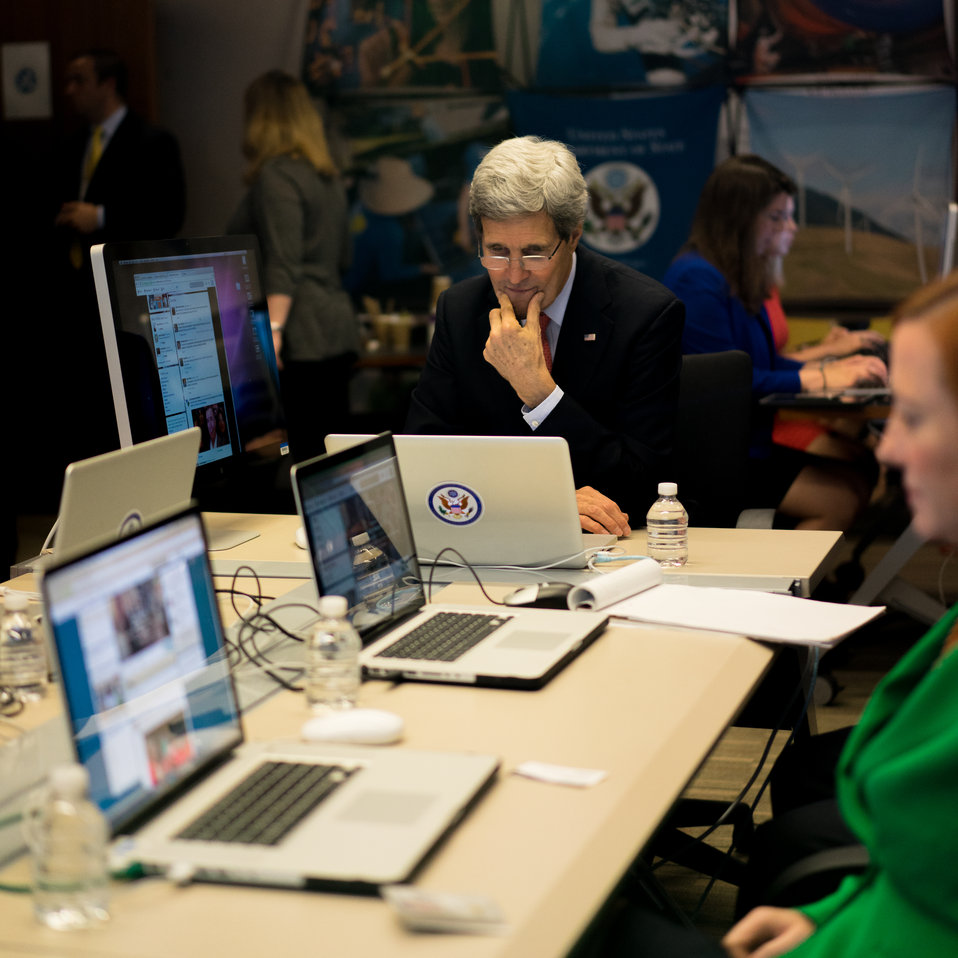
Secretary Kerry Hosts a Twitter Chat

U.S. Secretary of State John Kerry hosts a Twitter chat with the Young African Leaders Initiative Network at the U.S. Department of State in Washington, D.C., on May 9, 2014.